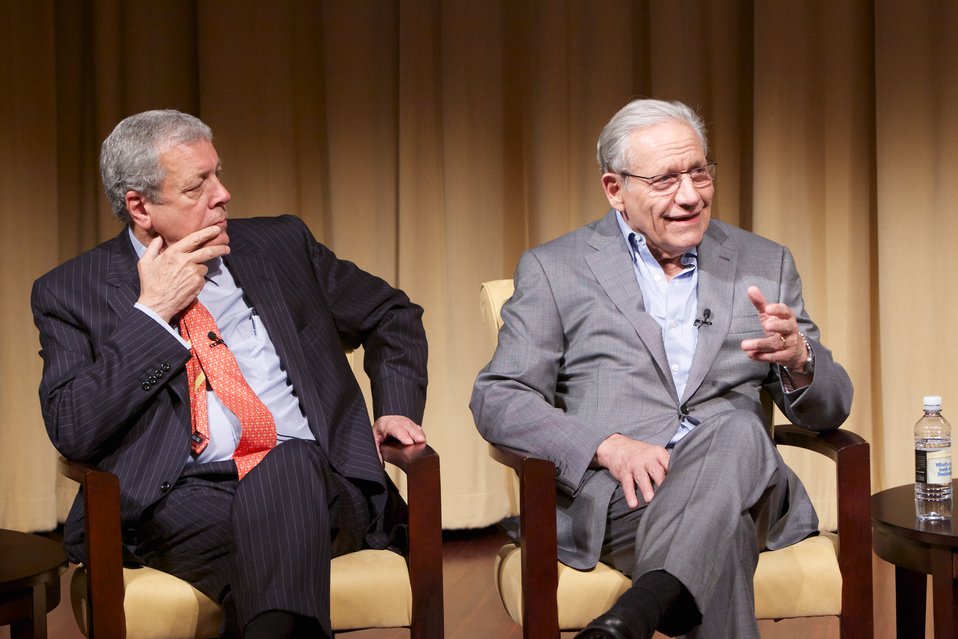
The Role of Congress in International Crises